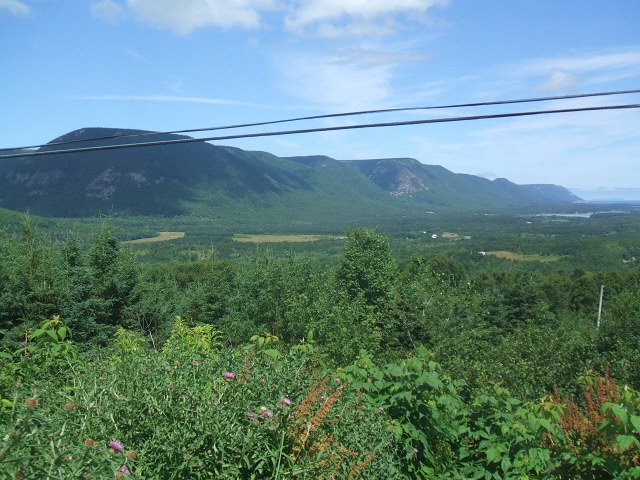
Viewing Sunrise Valley from the Cabot Trail, NS